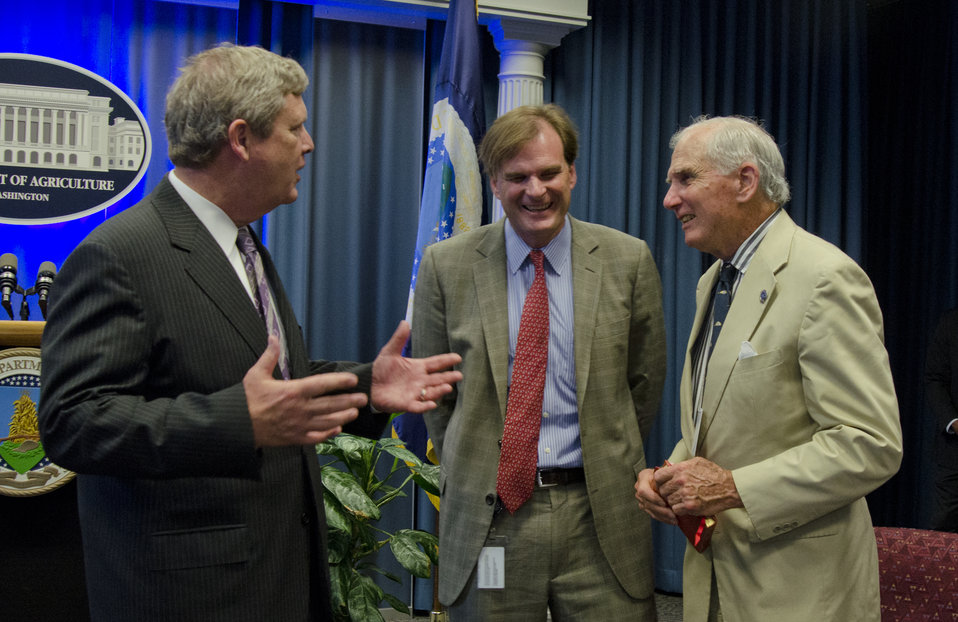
Agriculture Secretary Tom Vilsack talks with U.S. Department of Agriculture (USDA) Under Secretary for Natural Resources and Environment (NRE) Robert Bonnie (center) and his father Ned after Bonnie was sworn in at USDA in Washington, D.C. on Monday, Aug. 12, 2013.